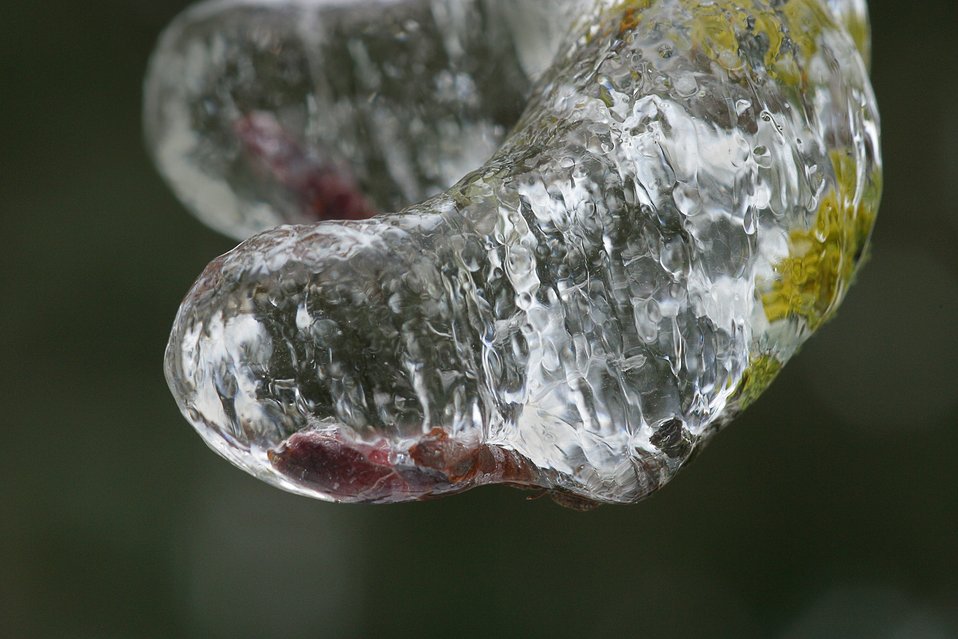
Ice on Service Berry branch.